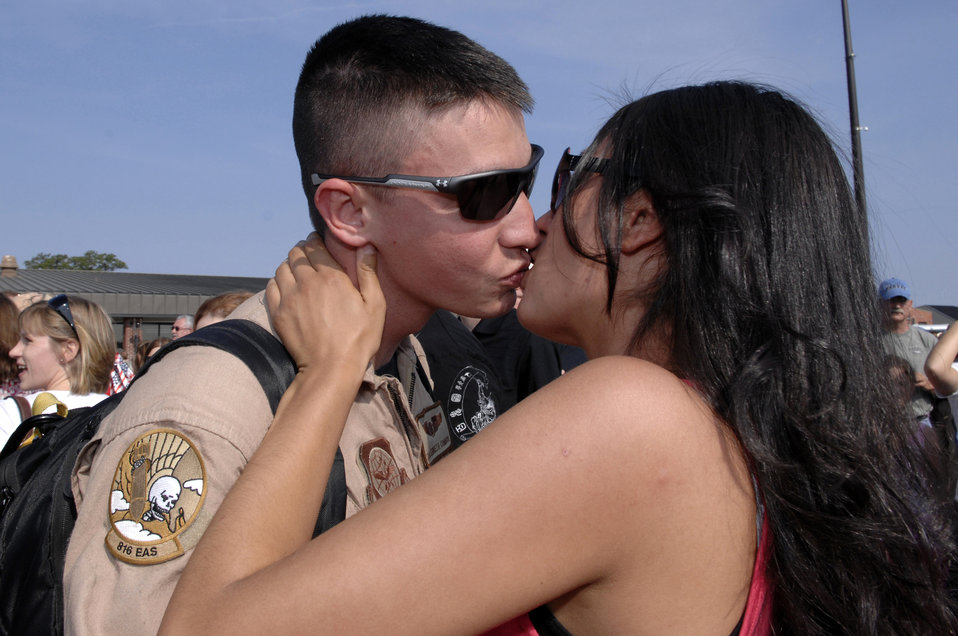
Mission complete: Charleston Airmen return home

Senior Airman Kenneth Common and girlfriend, Stacy Romero, reunite May 3 at Charleston Air Force Base, S.C. More than 140 Airmen from the 16th Airlift Squadron returned from their 120-day deployment to the Middle East in support of operations Enduring Freedom and Iraqi Freedom and operations in the Horn of Africa. While deployed, the 16th AS Airmen airlifted more than 110 million pounds of cargo and 60,000 Airmen, Soldiers, Sailors, Marines and distinguished visitors throughout Southwest Asia. Airman Commons is a loadmaster for the 16th AS.